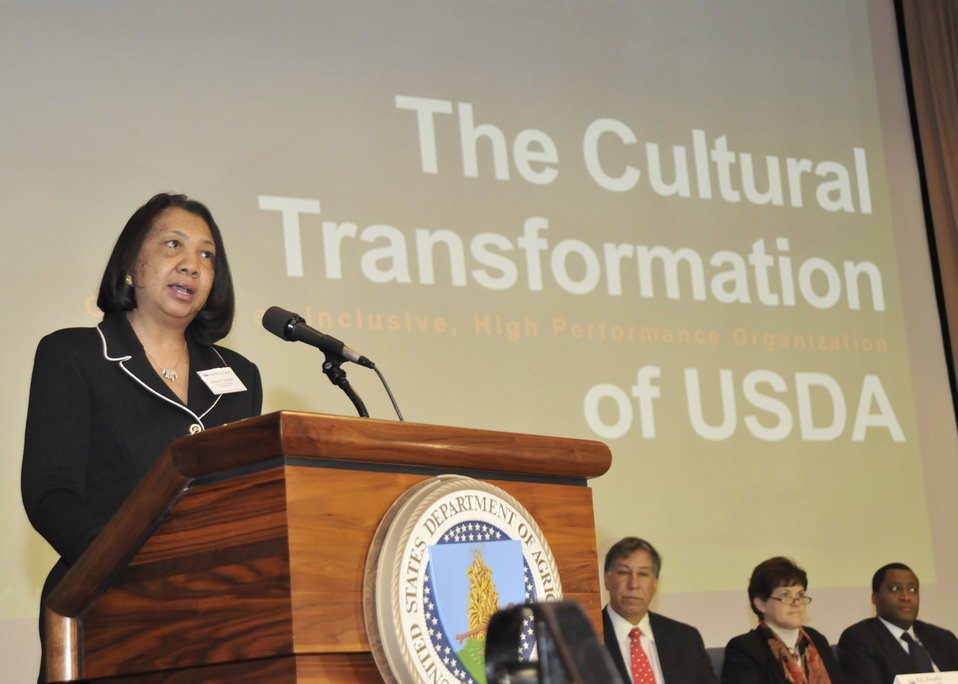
Assistant Secretary for Departmental Management Alma Hobbs speaks at the first of six Cultural Transformation Employee Listening Sessions held at the U.S. Department of Agriculture Jefferson Auditorium, in Washington, DC, on Wednesday, March 31, 2010. USDA is undergoing a process to transform the culture of the agency by creating a diverse, inclusive, and high-performance organization. (L to R in background Under Secretary for Marketing and Regulatory Programs Edward Avalos, Assistant Secretary for Congressional Relations Krysta Harden, and Assistant Secretary for Civil Rights Dr. Joe Leonard). USDA photo 10di1287-10.